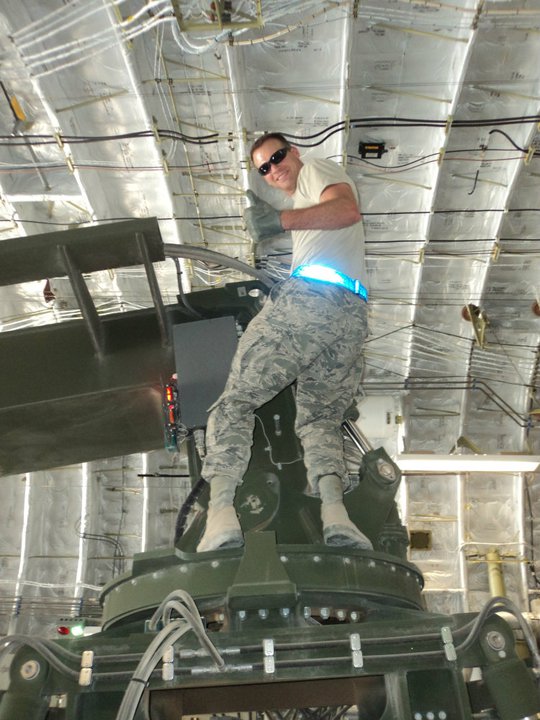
Mathew Weber, IT Specialist in Region 3, serves in the Air Force Reserve. His unit has spent time in Afghanistan.